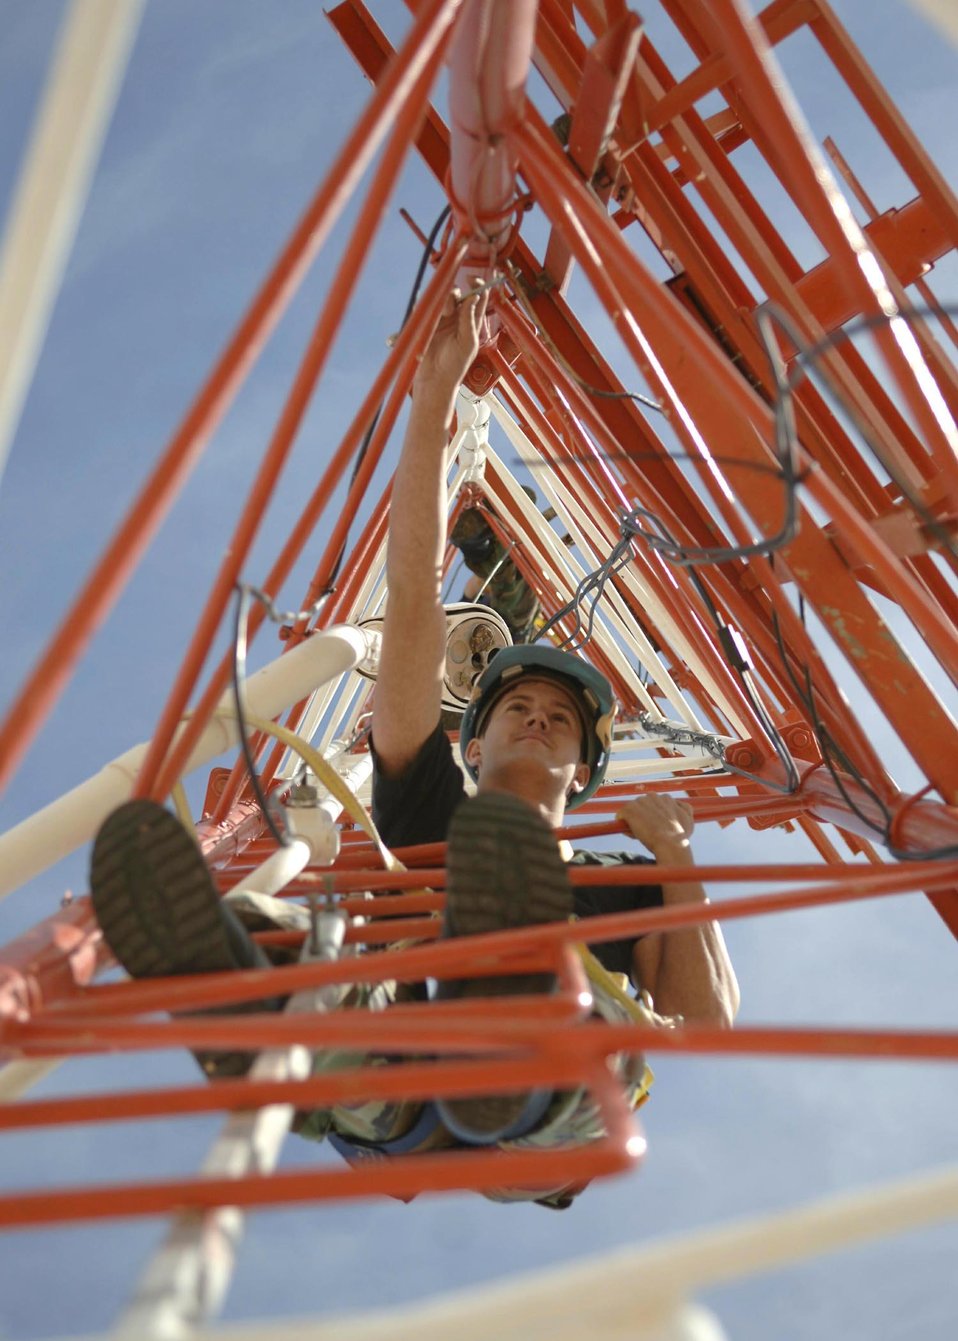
Tower maintenance

Senior Airman Robert Oehmke performs maintenance on an antenna tower Wednesday, March 29, 2006, at Davis-Monthan Air Force Base, Ariz. The antenna verifies calibration and alignment of airfield navigational equipment.